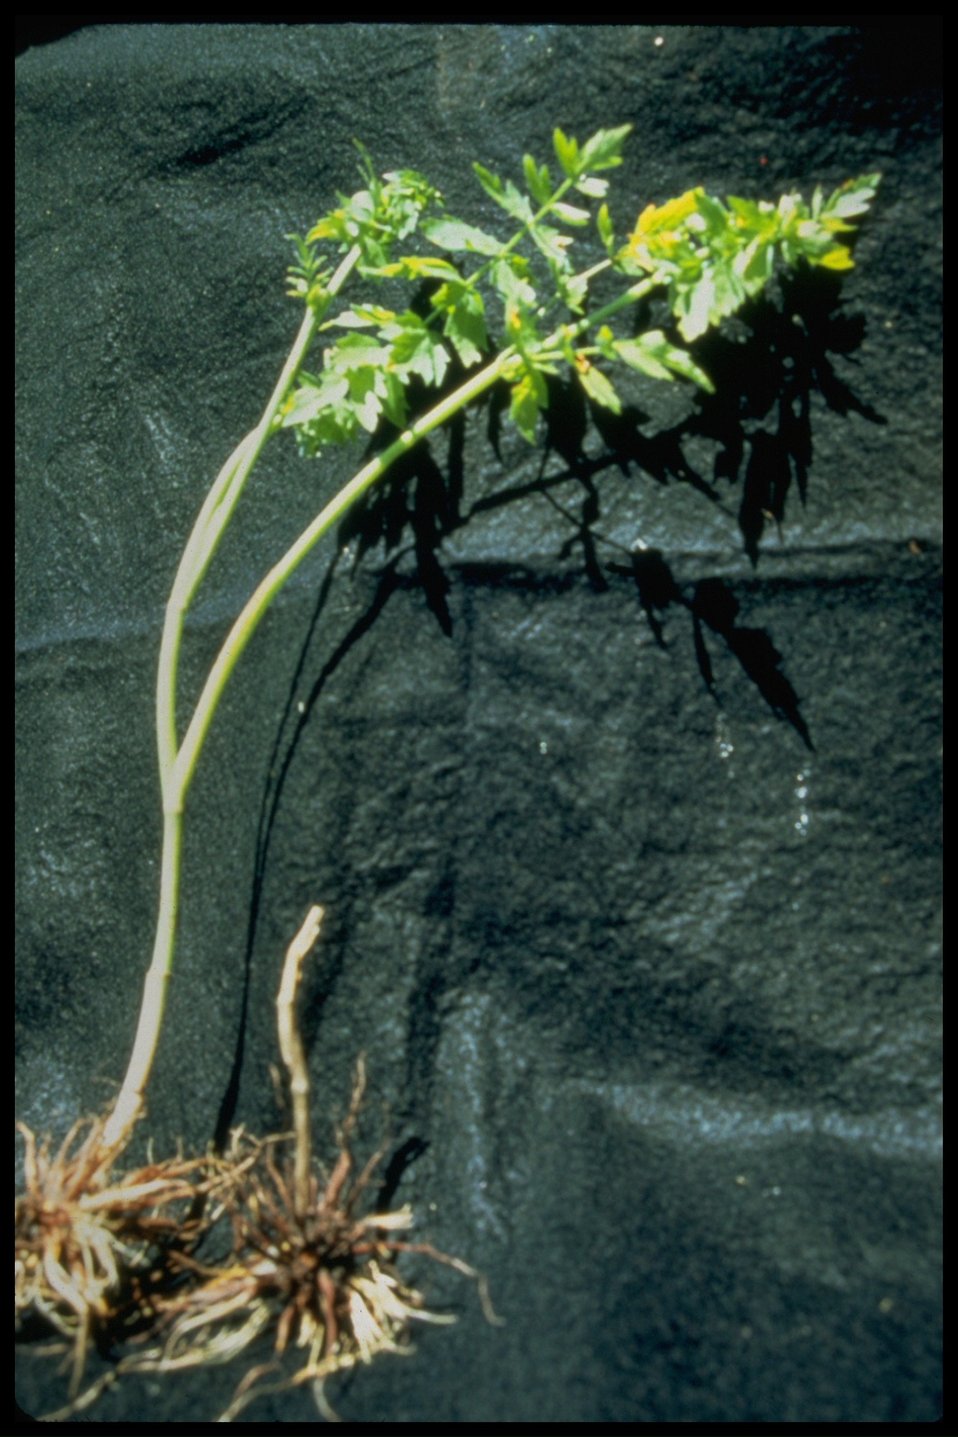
Perideridia howellii, or commonly known as Howell's False Caraway.